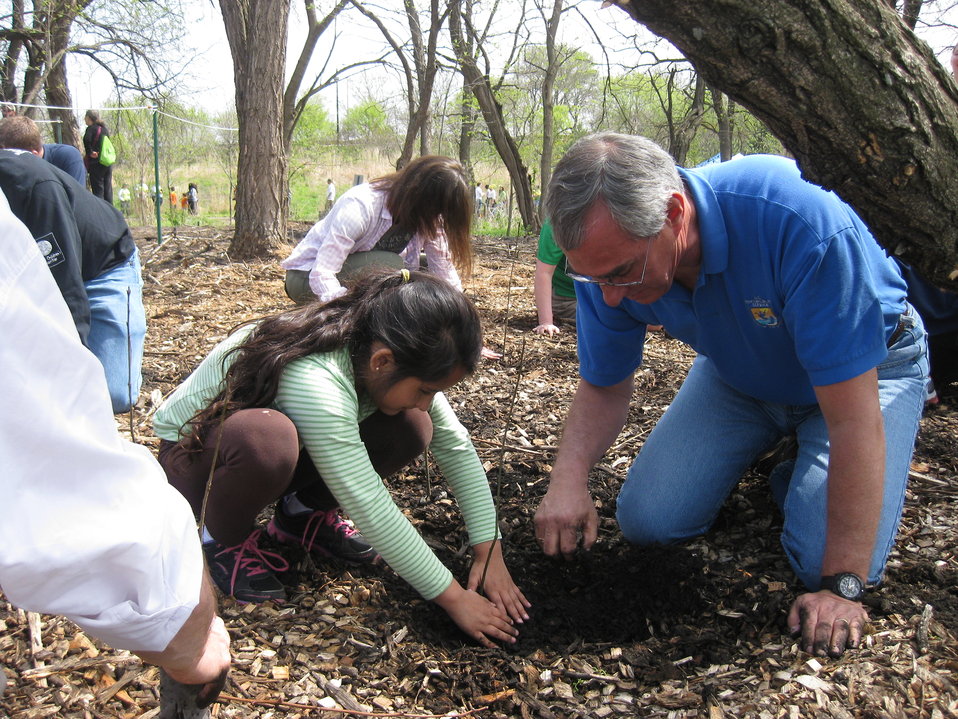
R3 RD Tom Melius helps plant seedlings

Chicago Park District Burnham Corridor Community Planting Day
May 10, 2014
Photo by USFWS; Louise Clemency